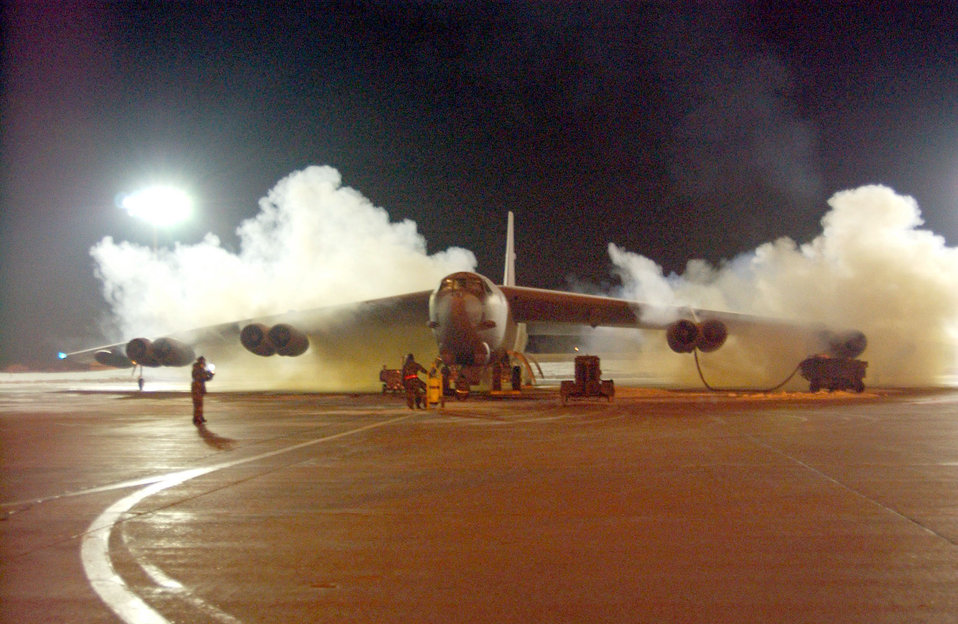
Out in the cold

MINOT AIR FORCE BASE, N.D. (AFPN) -- Airmen from the 5th Aircraft Maintenance Squadron conduct a fuel enrichment valve test on a B-52H Stratofortress here Jan. 15 while the temperature sits at 6 below zero. Contractors from Tinker Air Force Base, Okla., and Wichita, Kan., helped the squadron in a weeklong test to modify the fuel controls for cold-weather engine start ups.